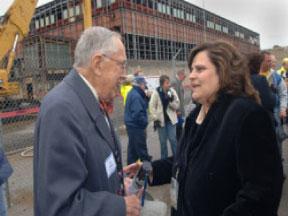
Oak Ridge Meeting - K-25 Demolition

Oak Ridge City Historian Bill Wilcox speaks with Assistant Secretary for Environmental Management Inés Triay during the start of demolition of the K-25 Building in Oak Ridge.